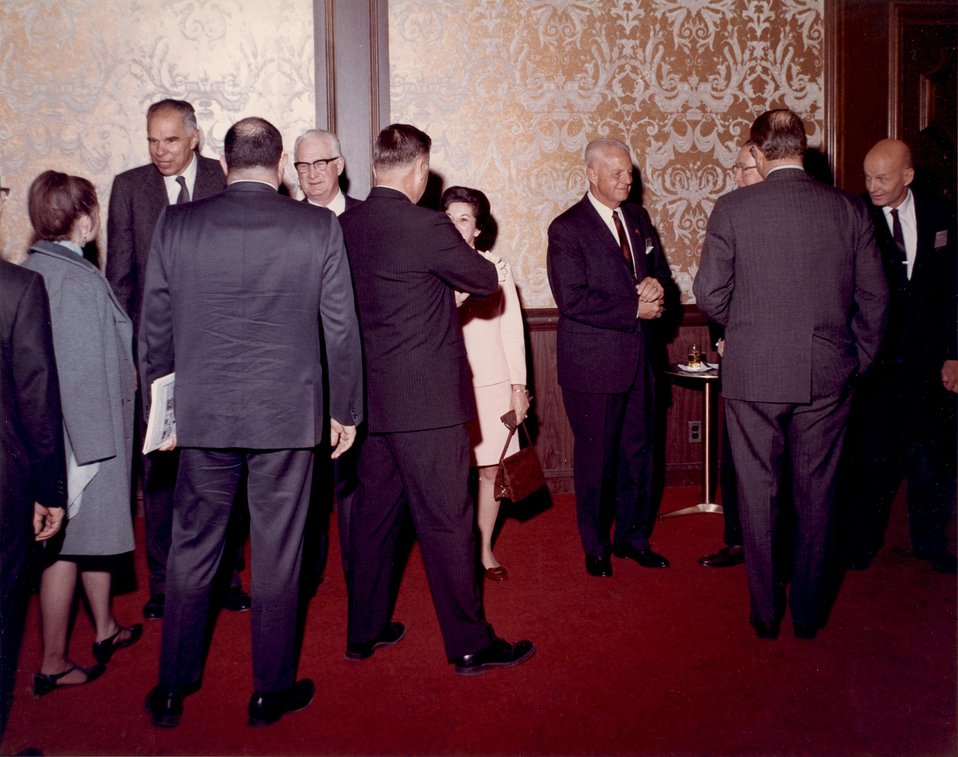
Enrico Fermi Award Ceremony. Imperial Ballroom. San Fransisco Hilton Hotel. 5:30 p.m., December 2, 1969. Fermi Award. Recipient: Walter Zinn. Date: Dec. 2, 1970.